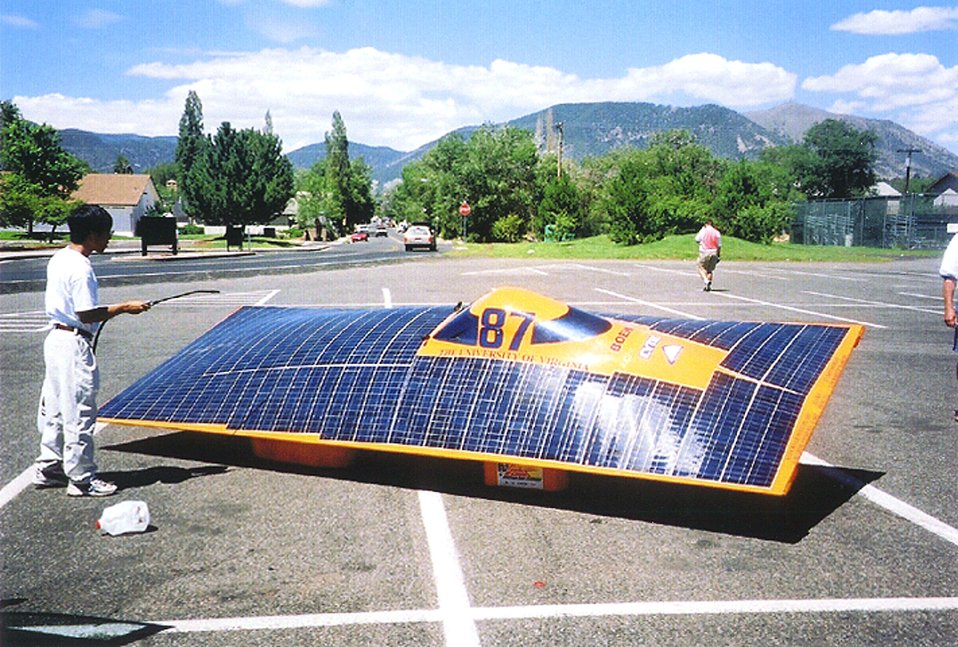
TEAM MEMBER FROM UNIVERSITY OF VIRGINIA IS COOLING CELLS BY SPRAYING WATER ON THEM.

THE AMERICAN SOLAR CHALLENGE (SUNRAYCE) 2001, THE LONGEST SOLAR CAR RACE IN THE WORLD, IS A BIENNIAL EDUCATIONAL SPORTING EVENT IN WHICH UNIVERSITY TEAMS, COMPANIES, AND CLUBS FROM AROUND THE WORLD COMPETE TO BUILD AND RACE SOLAR POWERED CARS ACROSS THE UNITED STATES. THIS YEAR THE RACE BEGAN IN CHICAGO, ILLINOIS ON JULY 15, 2001 AND WAS COMPLETED ON JULY 25, 2001 IN CLAREMONT, CALIFORNIA, TRAVELING ALL ALONG OLD ROUTE 66.